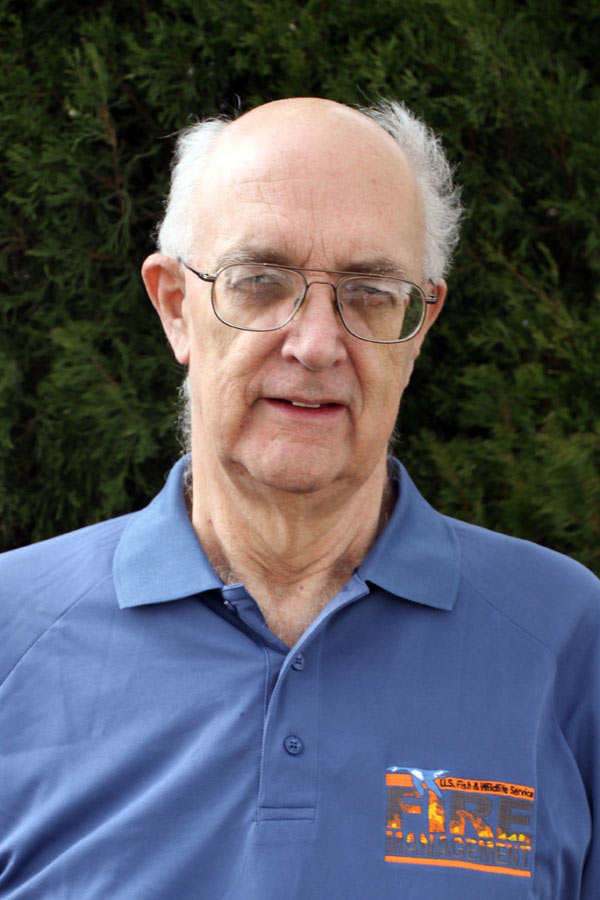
Cal Gale, now with the Fire Management Branch in Boise, Idaho, served in the Army from 1964 to 1966 in Okinawa.